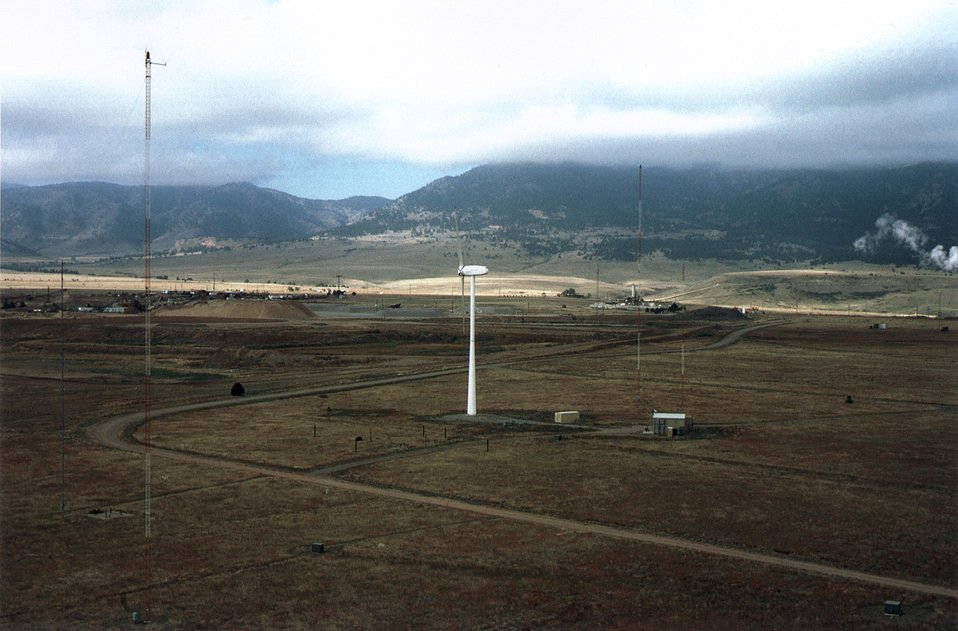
NREL'S NATIONAL WIND TECHNOLOGY CENTER IN GOLDEN, COLORADO.

DOE'S OFFICE OF ENERGY EFFICIENCY AND RENEWABLE ENERGY MANAGES THE FEDERAL WIND ENERGY PROGRAM. WIND ENERGY DIVERSIFIES THE NATION'S ENERGY SUPPLY AND TAKES ADVANTAGE OF A DOMESTIC RESOURCE. THE PROGRAM INCLUDES A COMPREHENSIVE WIND ENERGY RESEARCH PROGRAM, WIND TURBINE RESEARCH AND DEVELOPMENT, AND SUPPORT FOR UTILITIES, INDUSTRY, AND INTERNATIONAL WIND PROJECTS.